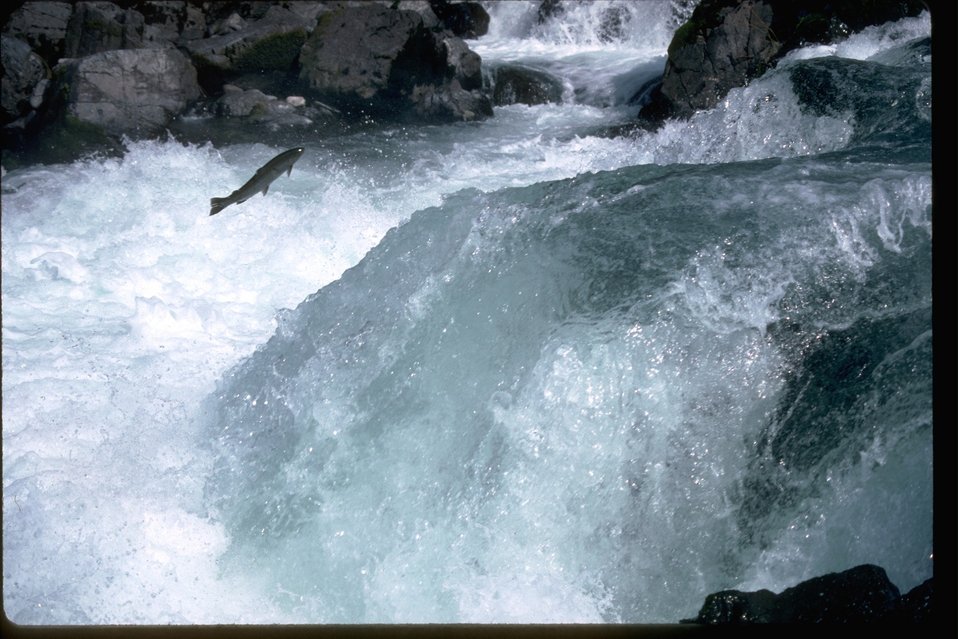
Salmon or Steelhead jumping up falls.